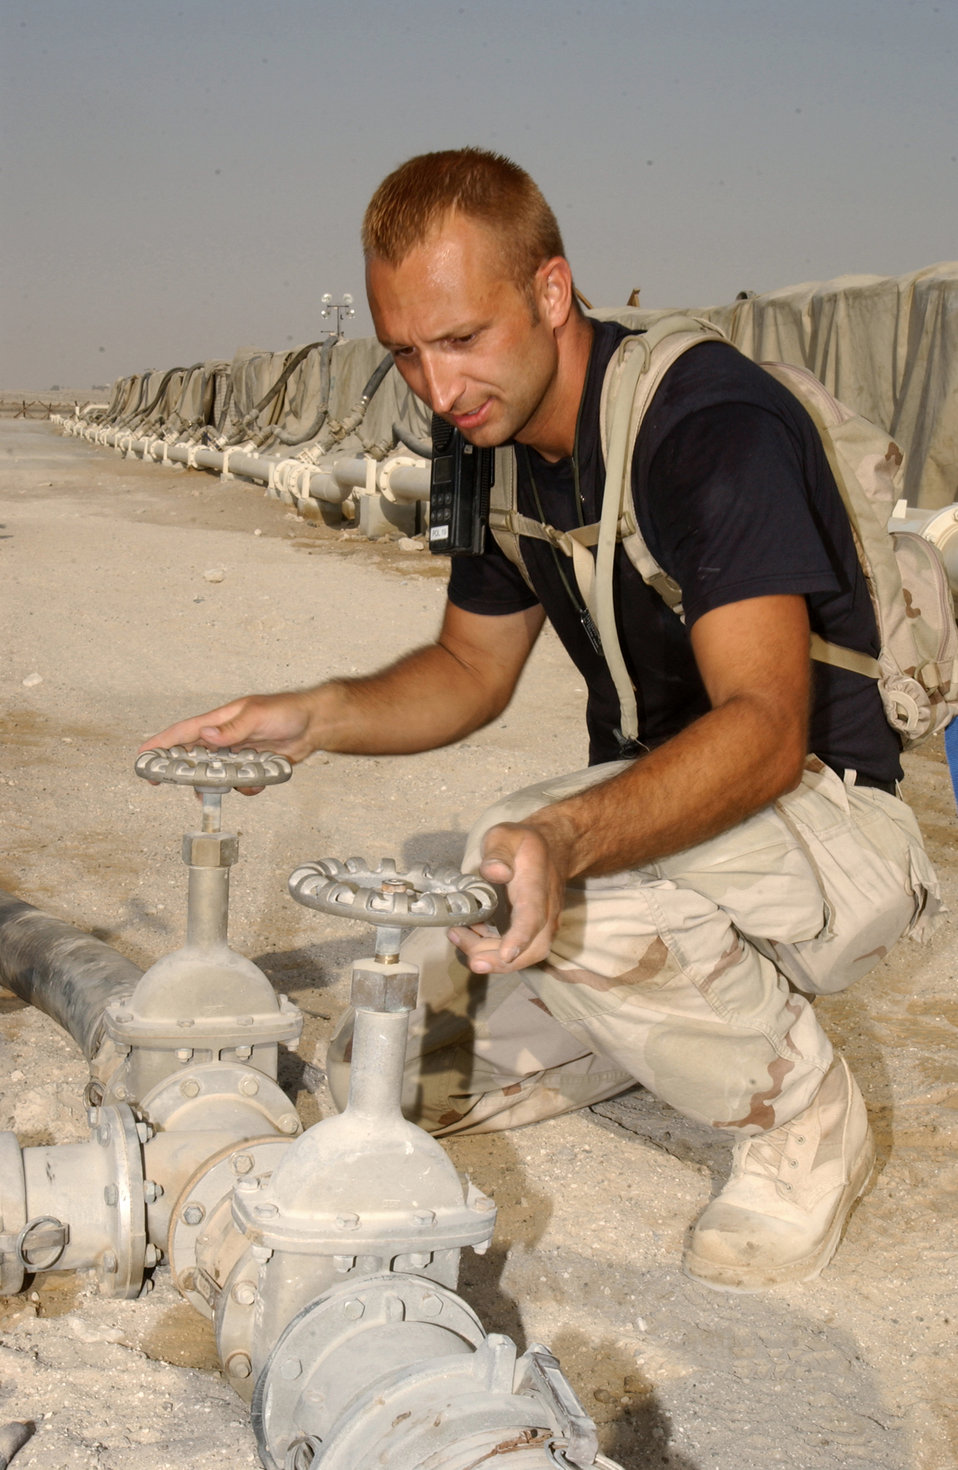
Fuels Airmen 'top off' mission

SOUTHWEST ASIA -- Staff Sgt. Chris Bass operates valves to transfer fuel between storage bladders at a forward-deployed location. He is a fuel systems operator assigned to the 380th Expeditionary Logistics Readiness Squadron's fuels flight.